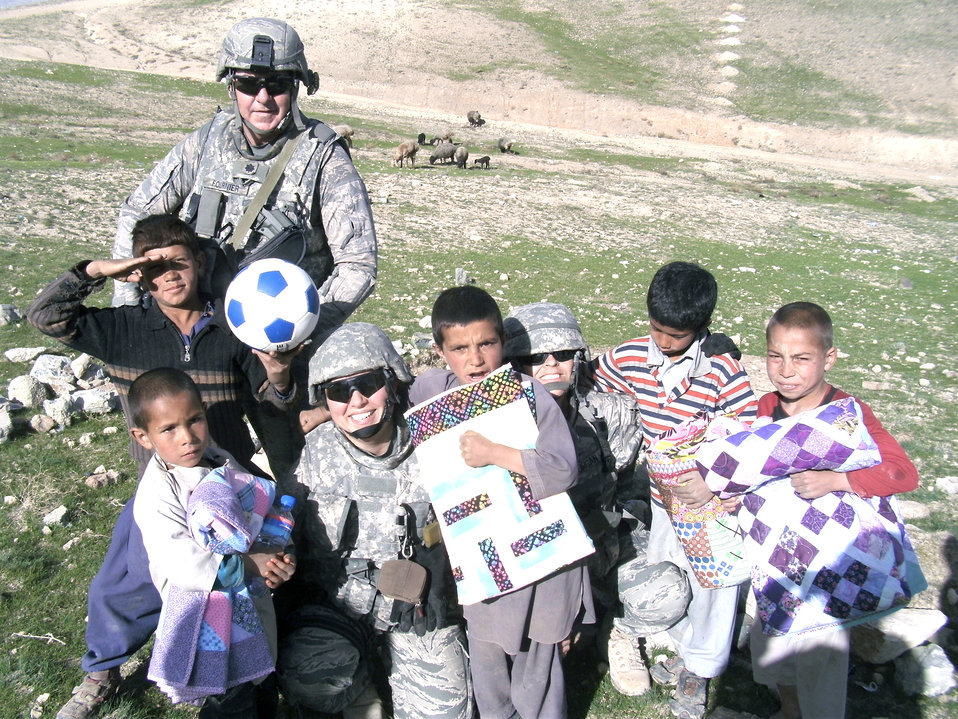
755th anniversary

Airmen assigned to the 855th Air Expeditionary Squadron take time May 10, 2010, to pose with Afghan children during